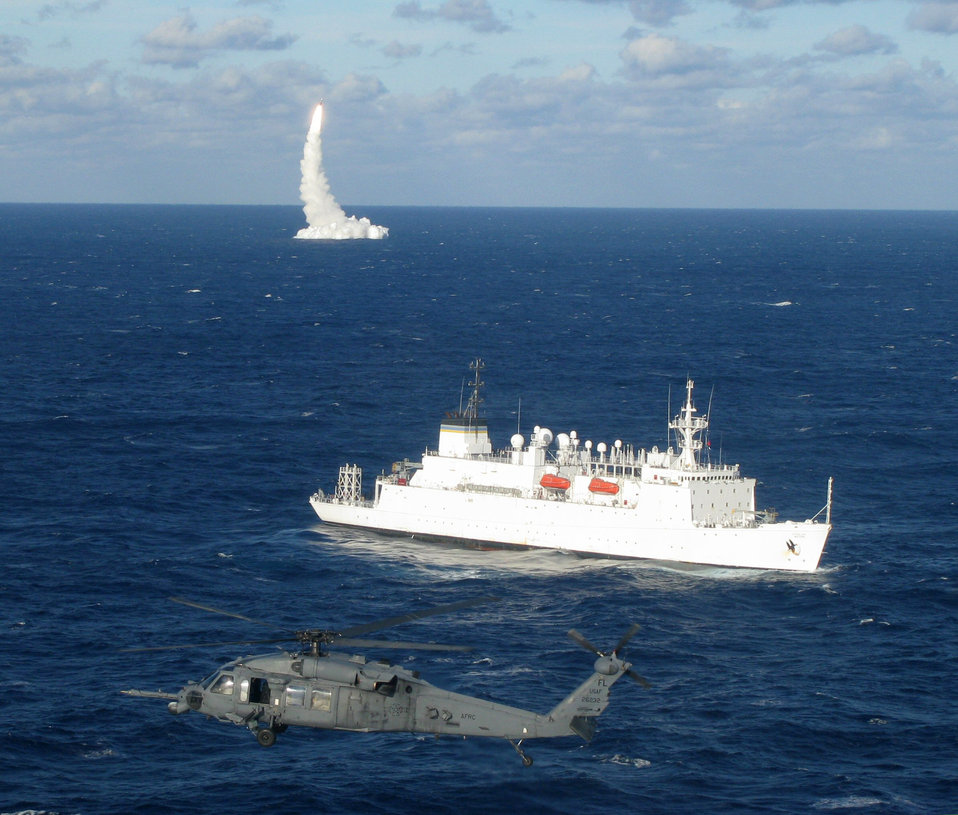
Space Technology

kdkdkdkdkdkd